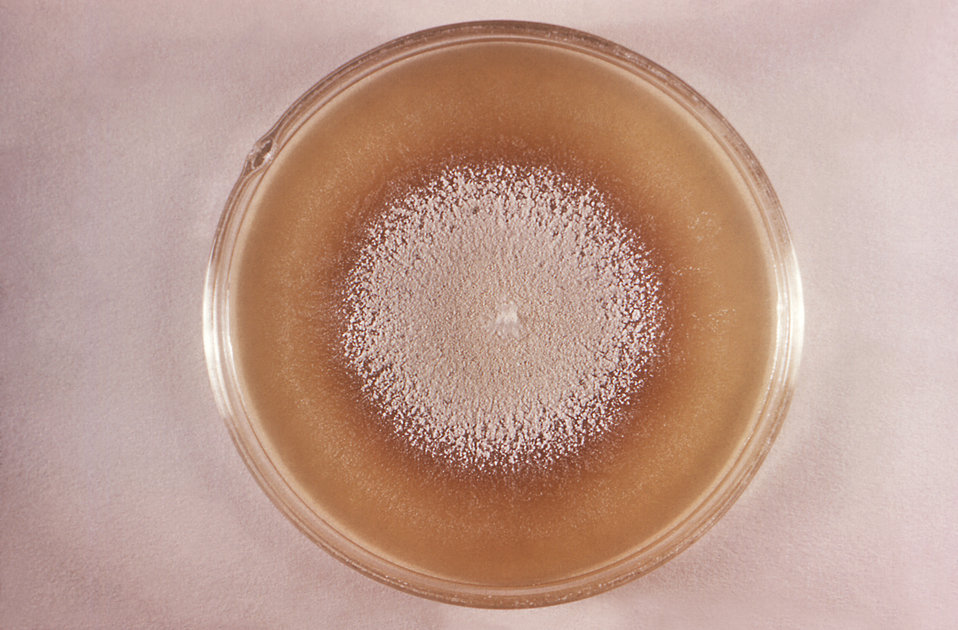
This image depicts a front view of a Petri dish culture plate, containing Sabouraud dextrose agar medium upon which a colony of the dermatophyte, Trichophyton mentagrophytes var. granulare had been cultivated. On the reverse side of this culture plate, this colony exhibited a red pigmentation.